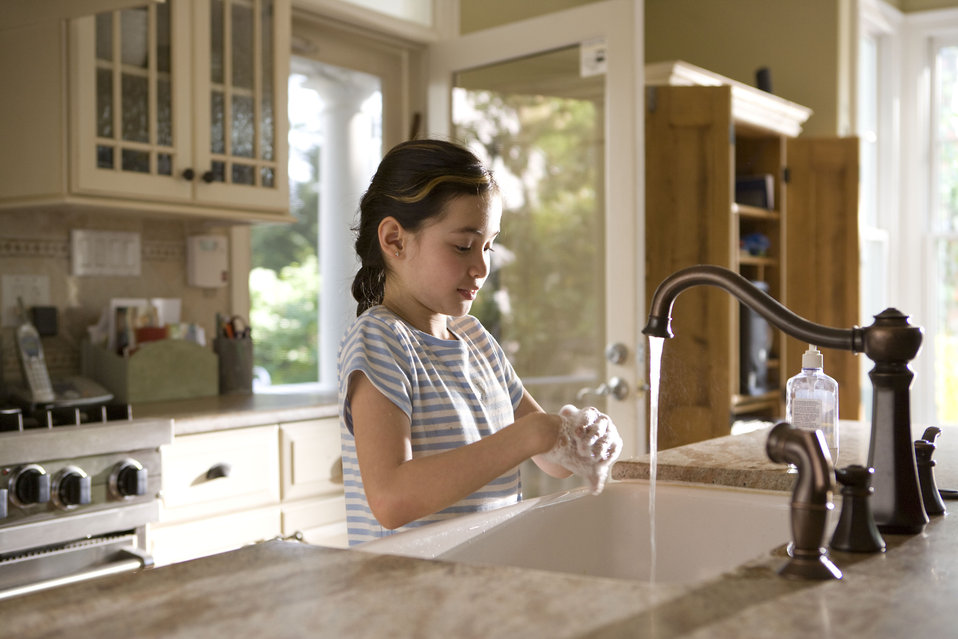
This young girl was shown in the process of properly washing her hands at her kitchen sink, briskly rubbing her soapy hands together under fresh running tap water, in order to remove germs, and contaminants, thereby, reducing the spread of pathogens, and her ingestion of environmental chemicals or toxins. Children are taught to recite the Happy Birthday song, during hand washing, allotting enough time to completely clean their hands.